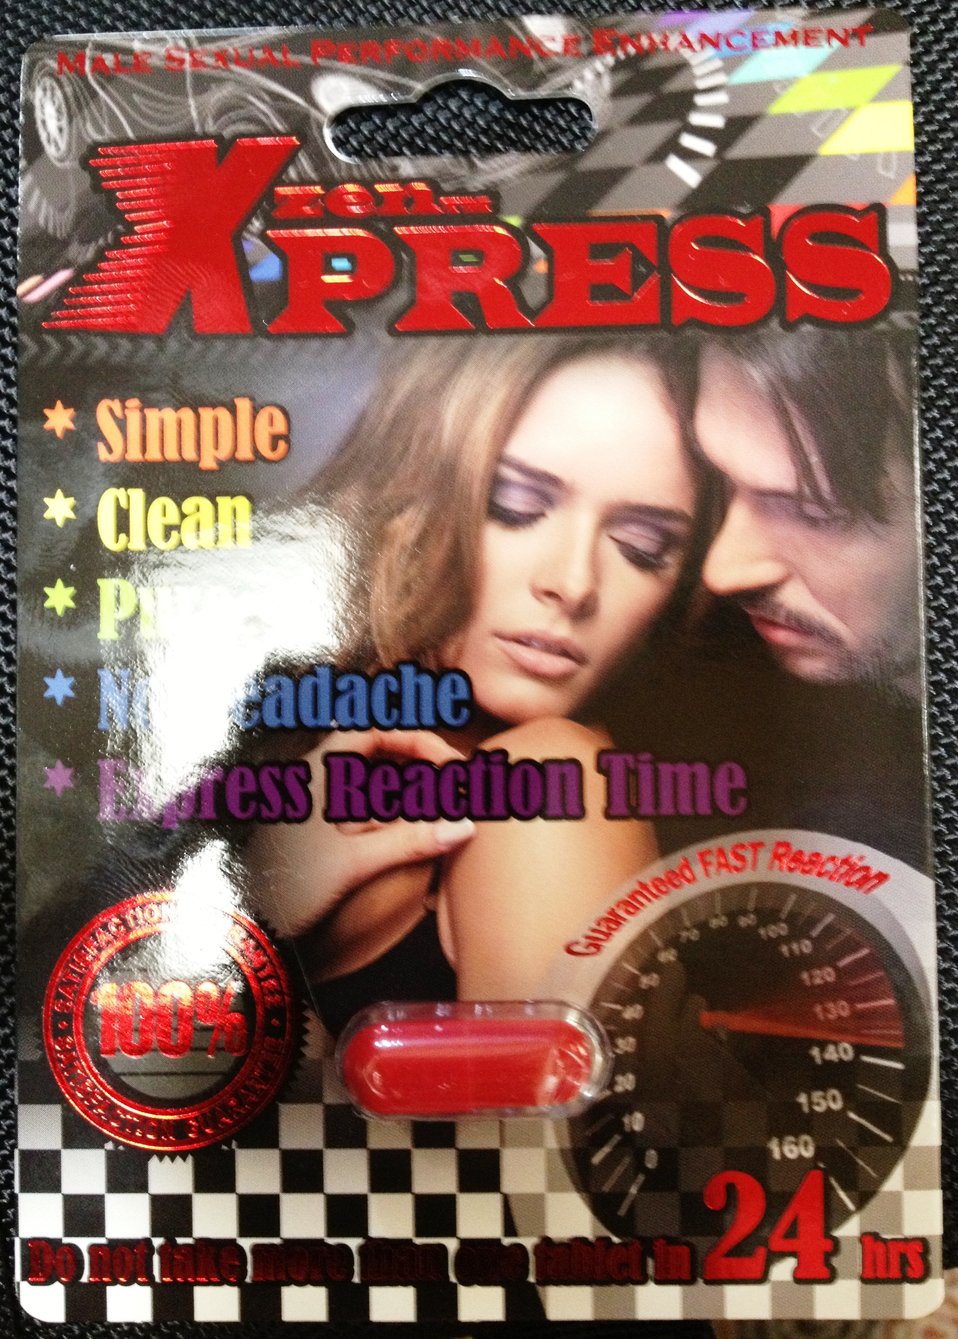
XzenPress

September 24, 2013 - The FDA is advising consumers not to purchase or use 'Xzen Xpress,' a product promoted and sold for sexual enhancement. The product was found to contain undeclared sildenafil and tadalafil. For more information, go to www.fda.gov/Drugs/ResourcesForYou/Consumers/BuyingUsingMe...

And read this Consumer Update: Beware of Fraudulent ‘Dietary Supplements’